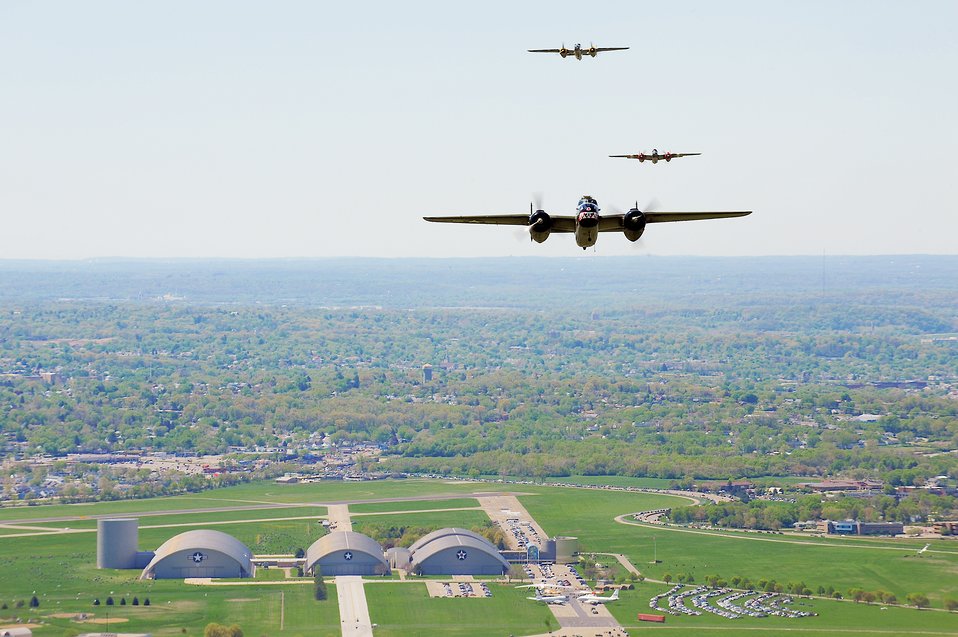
B-25 Mitchells fly again

Three B-25 Mitchell bombers fly over the National Museum of the U.S. Air Force at Wright-Patterson Air Force Base, Ohio, April 18, 2010, commemorating the anniversary of the Doolittle Raid over Tokyo of April 18, 1942.